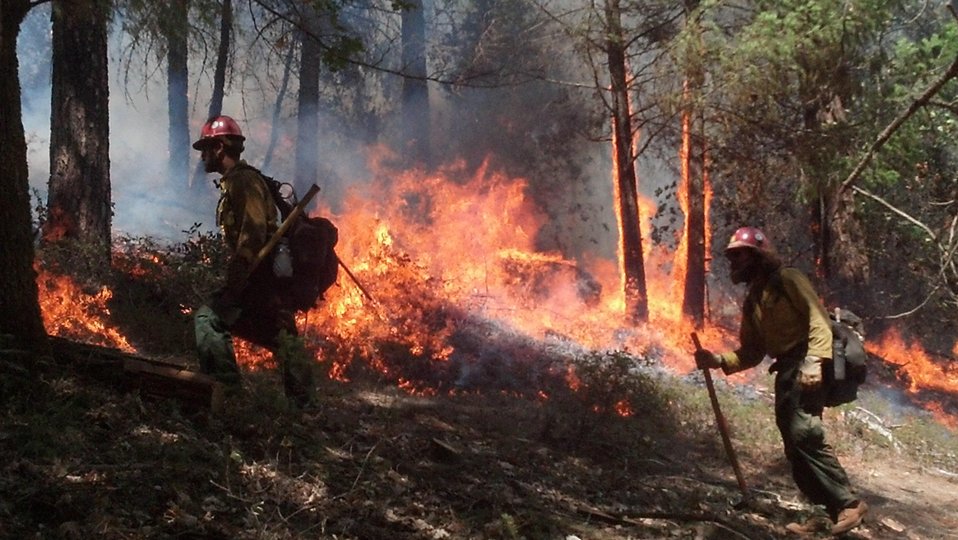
Stanislaus Hot Shots work on the fire line at the Rim Fire. The Rim Fire in the Stanislaus National Forest near in California began on Aug. 17, 2013 and is under investigation. The fire has consumed approximately 235,841 acres and is 70% contained.